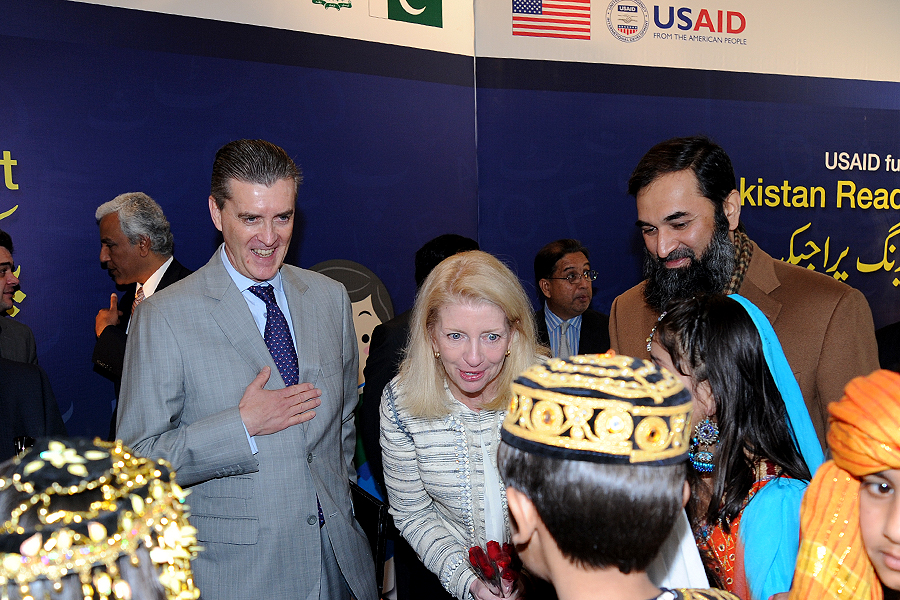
United States and Pakistan Launch the Pakistan Reading Project